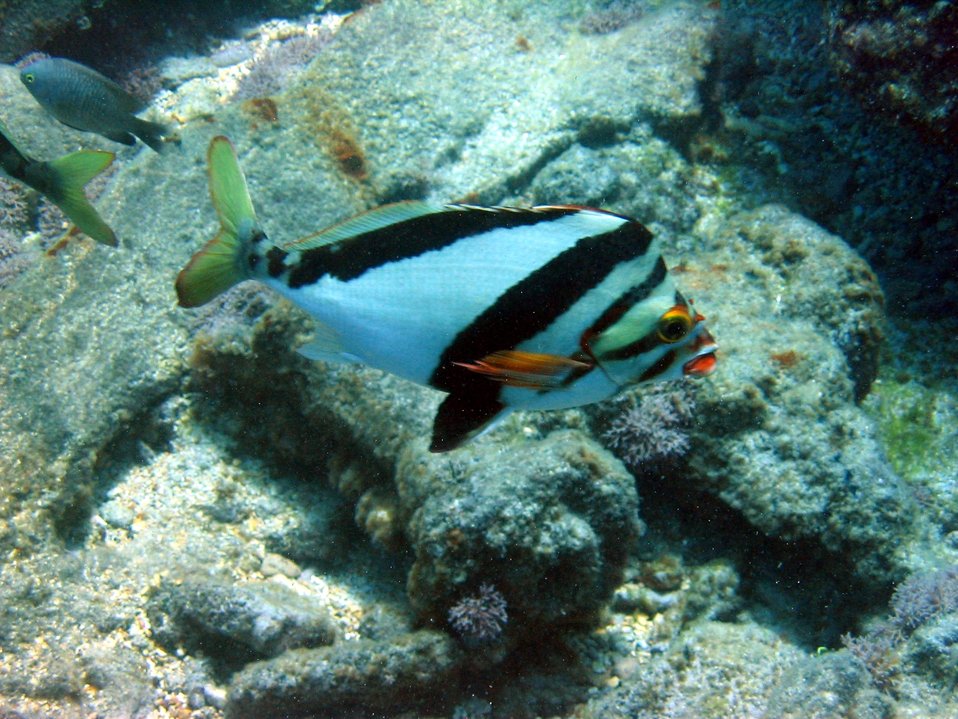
Morwong (Cheilodactylus vittatus).